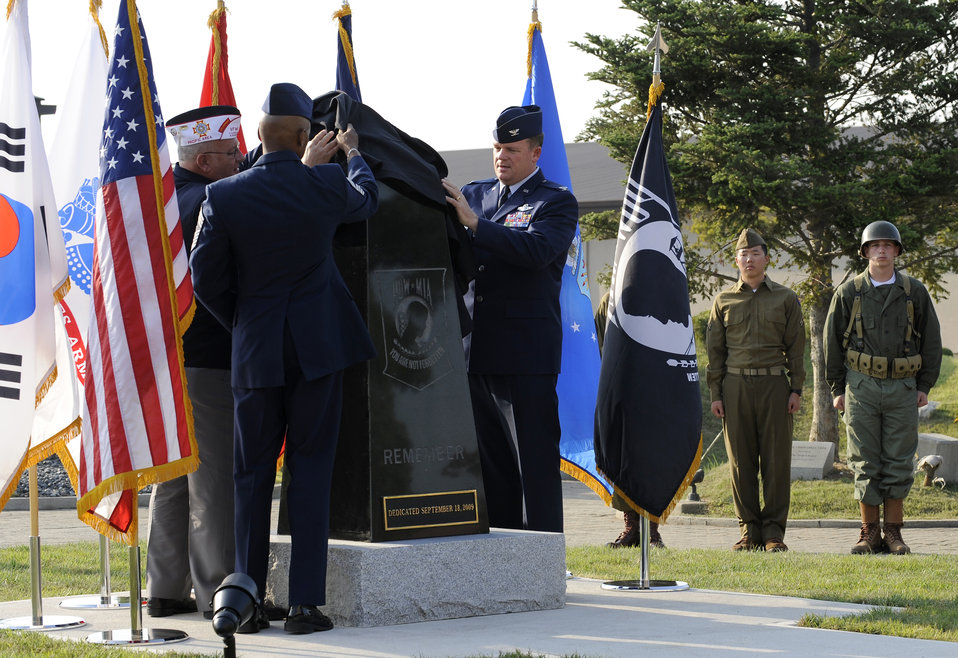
Osan officials dedicate POW/MIA memorial

Larry Lyons (left to right), Chief Master Sgt. Michael Williams and Col. Mark Mattison and unveil a POW/MIA remembrance statue during a dedication ceremony in front of the base theater Sept. 18, 2009, at Osan Air Base, South Korea. Colonel Mattison is the 51st Fighter Wing vice commander, Chief Williams is the 51st Fighter Wing command chief and Mr. Lyons is the former the former Veterans of Foreign Wars Department of the Pacific commander.